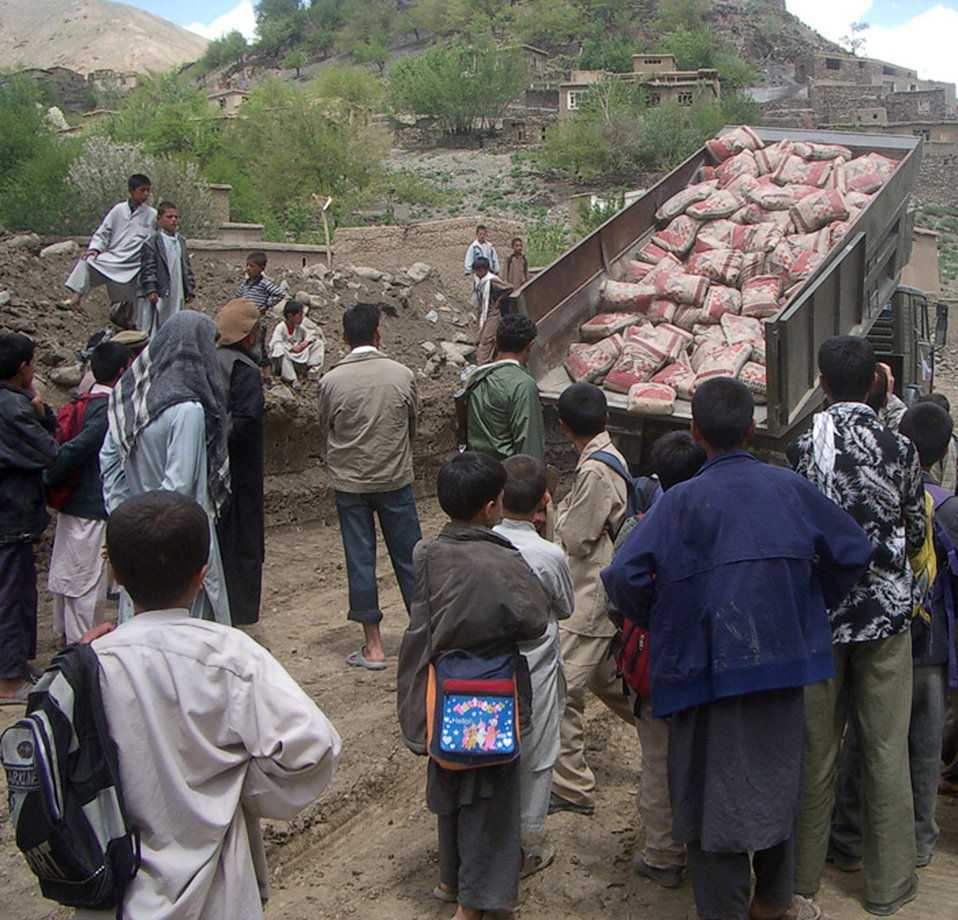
PRT turns best practice into Afghan community favorite

Afghanistan villagers in the Khenj district watch as bags of ready-to-mix cement are unloaded in Panjshir Province, Afghanistan. The cement was used to repair a retaining wall that protects a mosque.